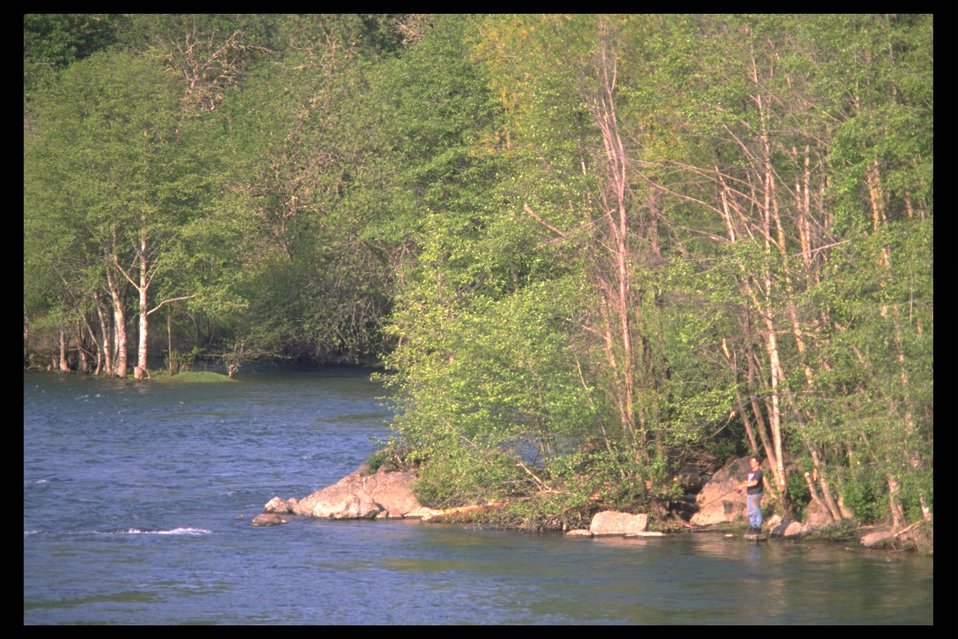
Bank-fishing the Rogue River near bridge at Shady Cove.